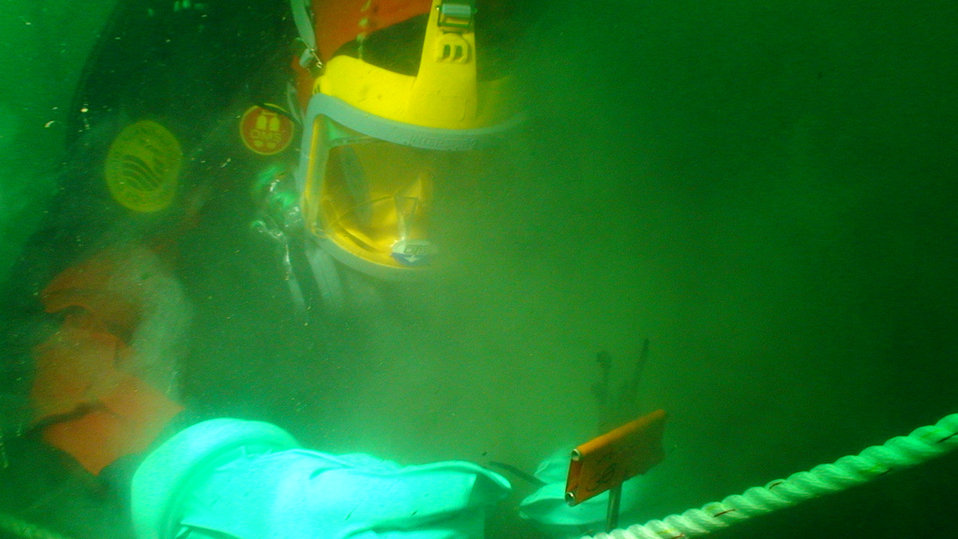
Up close with an underwater cap, Wykoff Superfund Site, Puget Sound, Washington.

EPA diver Brent Richmond installs 'solid phase microextraction devices' (SPMDs) at the Wyckoff Superfund Site on the east side of Bainbridge Island in Puget Sound.

Those devices will help to determine if the cap is still effective in containing the creosote contamination. Due to the potential for creosote contact, these divers were fully isolated and had to be decontaminated after each dive.

For more information about this cleanup site: yosemite.epa.gov/r10/cleanup.nsf/sites/wyckoff

Or to learn more about EPA's Pacific Northwest dive team visit: www.epa.gov/region10/dive